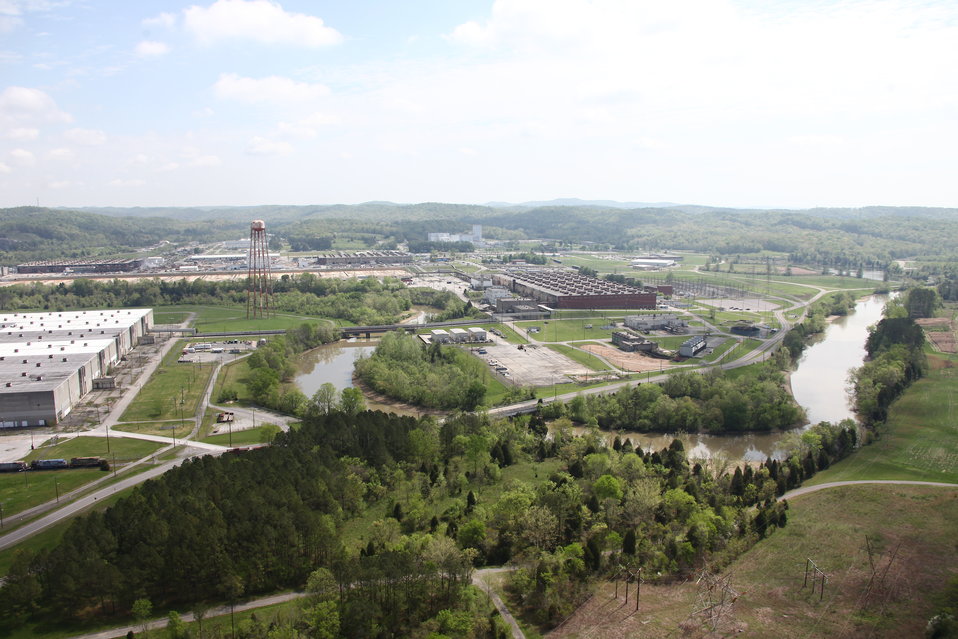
ETTP